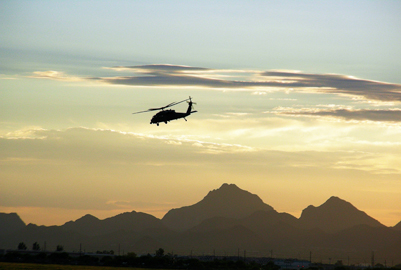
Rescue Airmen respond to helicopter crash

A 920th Rescue Wing HH-60G Pave Hawk helicopter pierces the desert sky over the southern-Arizona mountains as part of two-weeks of high-altitude training as pilots and aircrews from the 920th Rescue Wing here trained July 12 through 25, 2008, at Davis-Monthan Air Force Base, Ariz. Members of the 943rd Rescue Group here responded to a Department of Public Safety helicopter crash recently. As an Air Force Reserve Command unit, the 943rd RQG is currently under the control of the 920th Rescue Wing, Patrick Air Force Base, FL., and is the only Reserve rescue unit in the Southwestern United States.